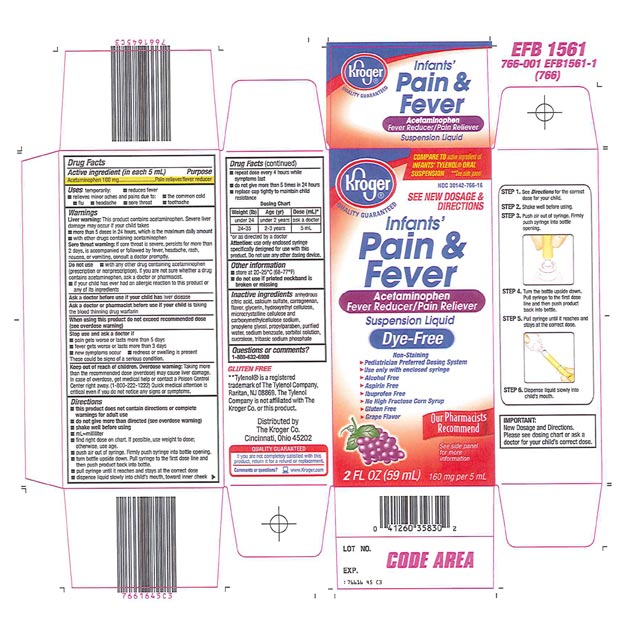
Recalled - Acetaminophen infant suspension liquid

November 1, 2013 – Product Recall – Perrigo Initiates Nationwide Voluntary Product Recall of Acetaminophen Infant Suspension Liquid, 160 Mg/5 Ml, Due to a Potential Defect with the Co-packaged Oral Syringe.